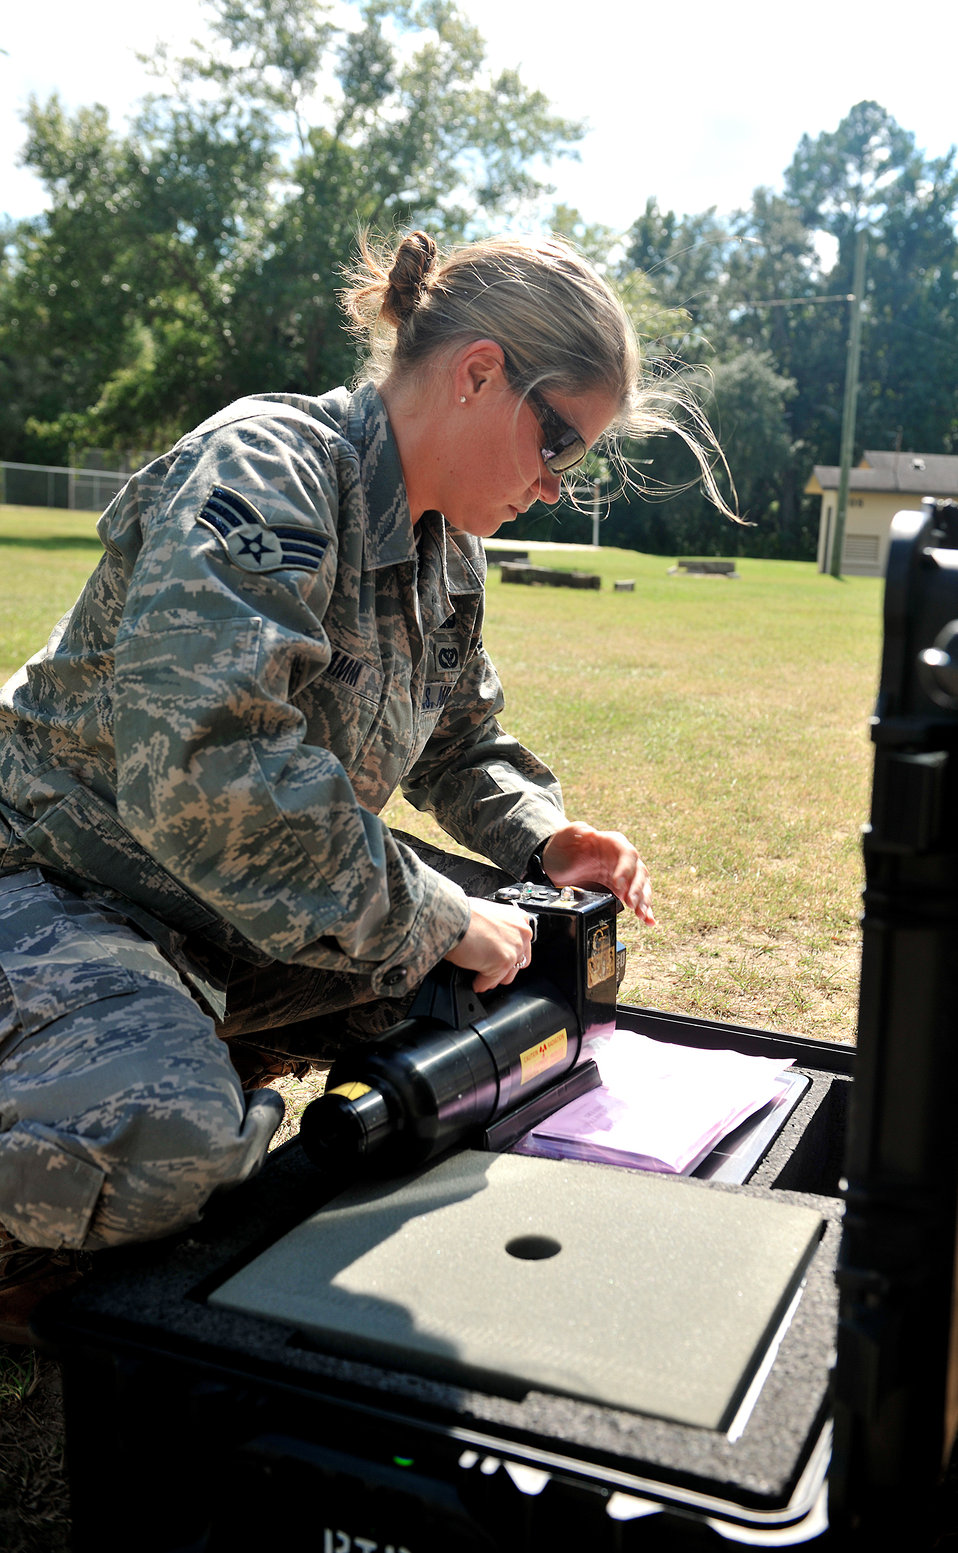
EOD team trains with new response vehicle

Senior Airman Katie Hamm prepares equipment during a hostage training exercise Oct. 13, 2010, at Moody Air Force Base, Ga. Airmen from the 23rd Civil Engineer Explosive Ordnance Disposal Flight tested the ability of their new Bomb Squad Emergency Response Vehicle during the exercise. Airman Hamm is an EOD technician assigned to the 23rd CE EOD Flight.